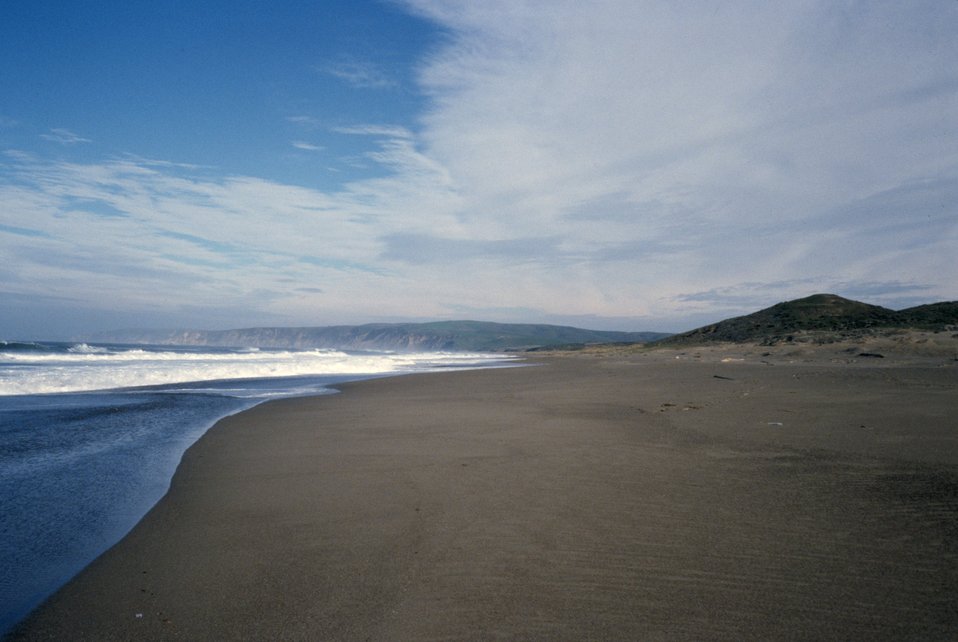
Point Reyes Great Beach south end. Looking north toward Kehoe Beach and Bodega Head.